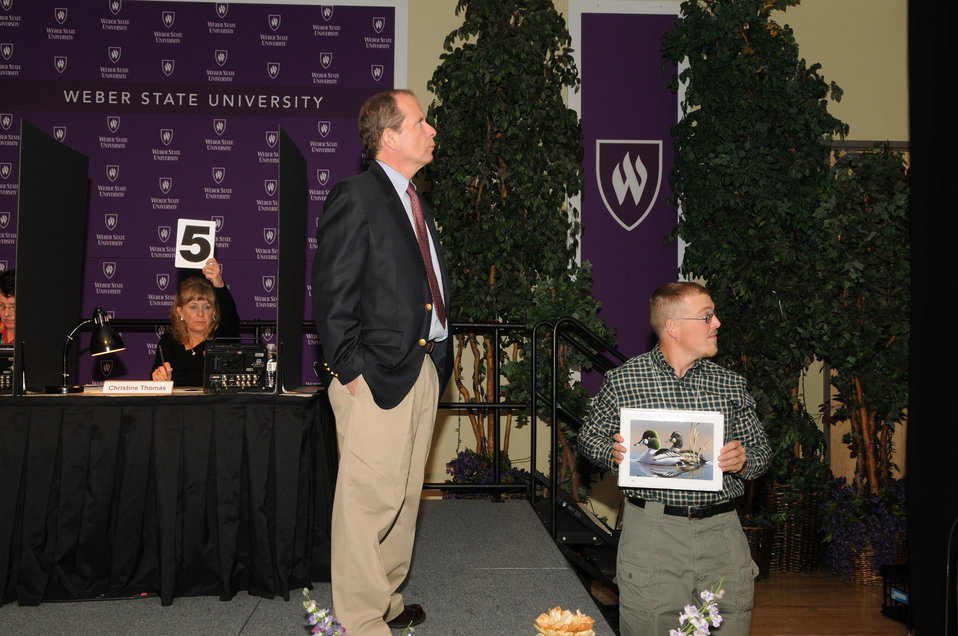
Artwork Presentation

The U.S. Fish & Wildlife Service sponsored the 2012 Federal Duck Stamp Art Contest September 28 and 29 in Ogden, Utah, at Weber State University. A panel of five judges was responsible for choosing the art work used to design the 2013-2014 Migratory Bird Hunting and Conservation Stamp.